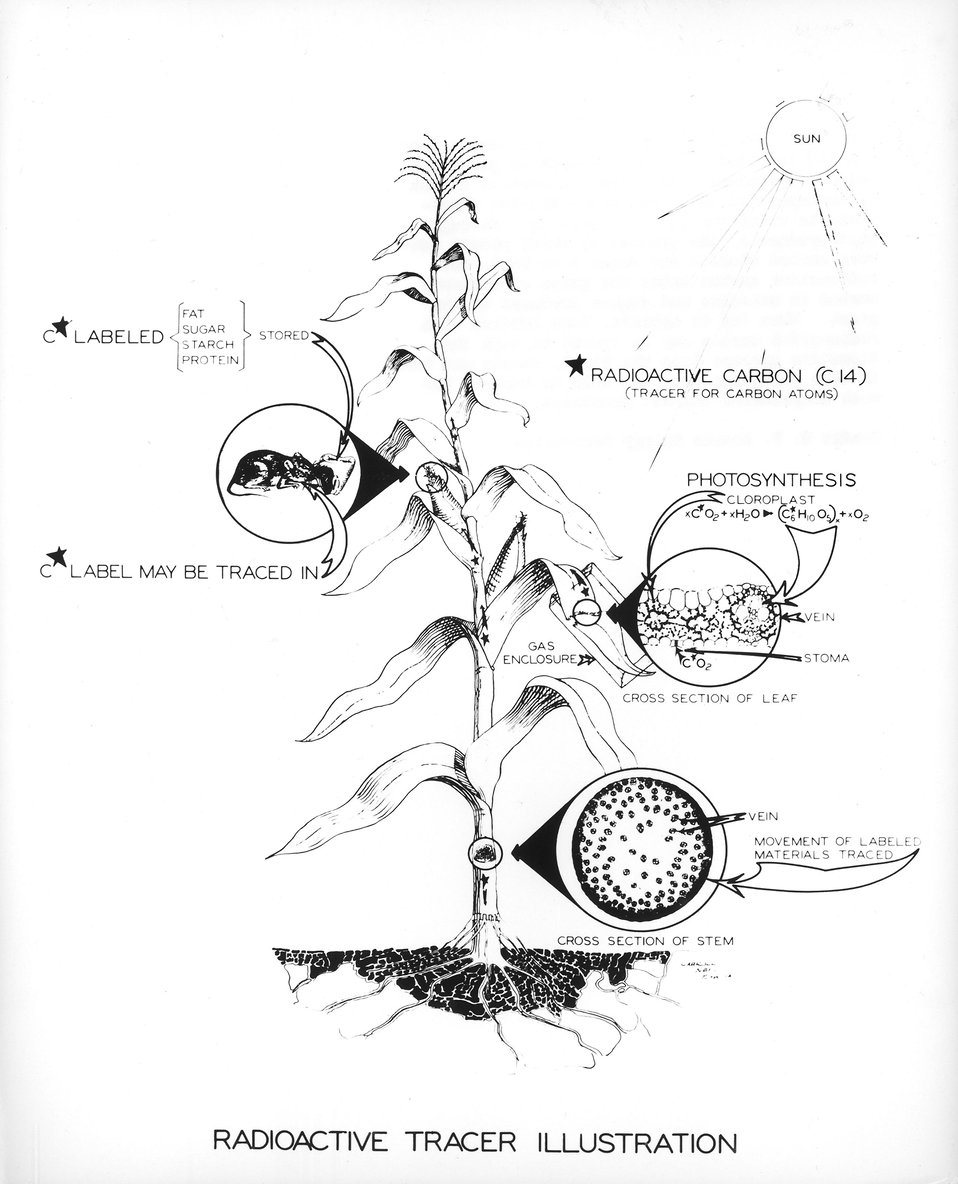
Radioactive carbon (carbon 14) is widely used in research on plant and animal physiology. Here the radioactive carbon is incorporated into the carbon dioxide atmosphere in which the plant is growing. c. 1949